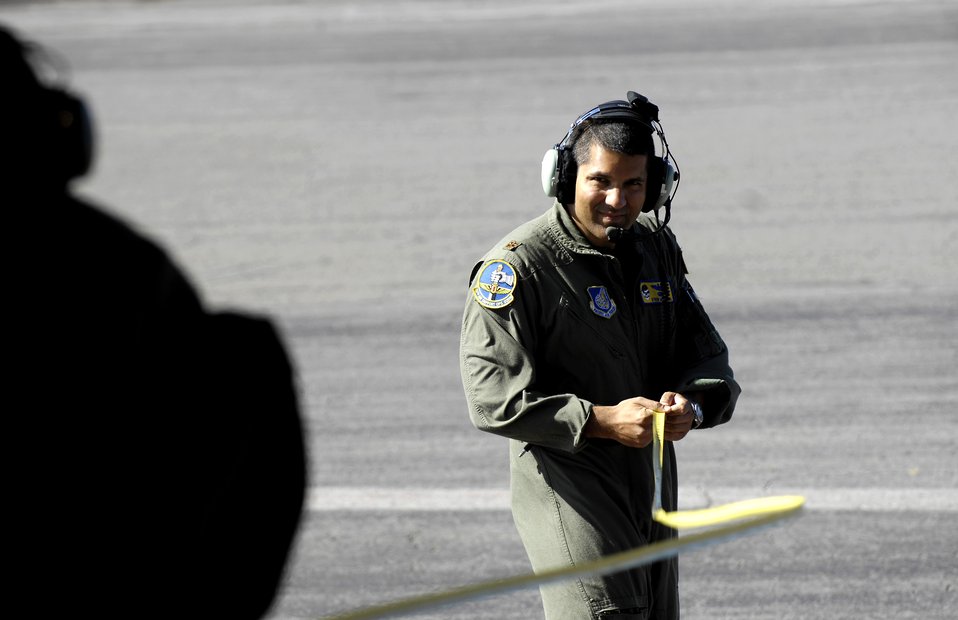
Hickam crew prepares for AMC Rodeo

Maj. Bryon Miranda helps Tech. Sgt. Ansen Lucas measure the distance between his C-17 Globemaster III and their target point for stopping June 22 at Hickam Air Force Base, Hawaii. The 535th Airlift Squadron is practicing for the upcoming 2007 Air Mobility Command Rodeo.